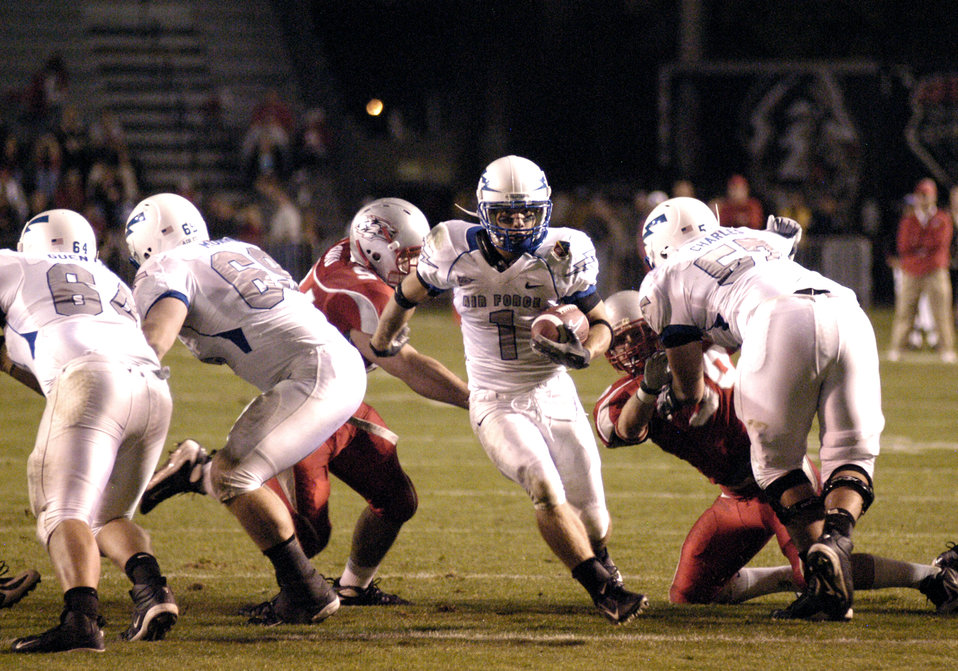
Falcons self destruct in 34-31 loss

Falcon z-back Chad Hall darts through a hole made by his offensive line during Air Force's 34-31 loss to New Mexico Oct. 25 at University Stadium in Albuquerque. Hall recovered from stomach flu earlier in the week to rush for a team-high 97 yards and catch six passes for 66 yards.